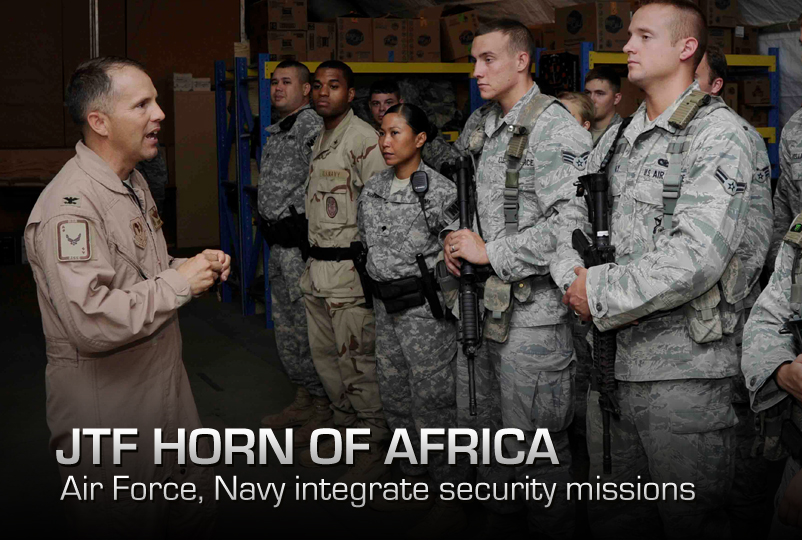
JTF Horn of Africa